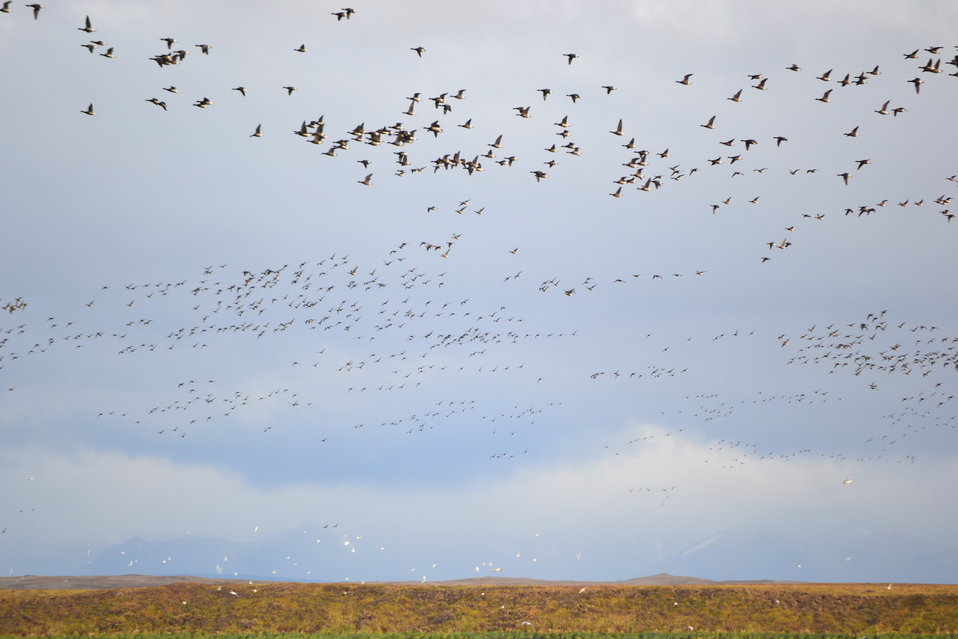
Black brant over Izembek Lagoon (Izembek National Wildlife Refuge).